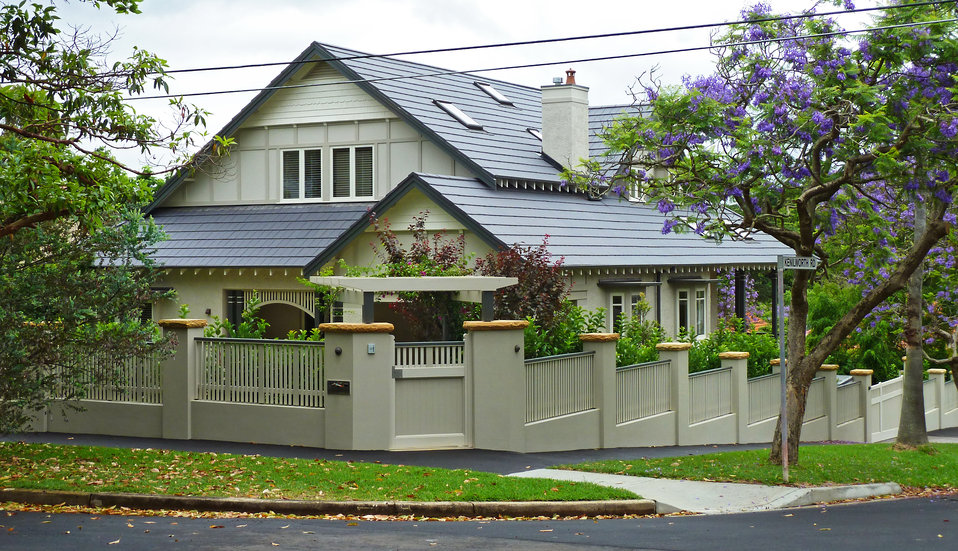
14 Blenheim Road, Lindfield, New South Wales, Australia.